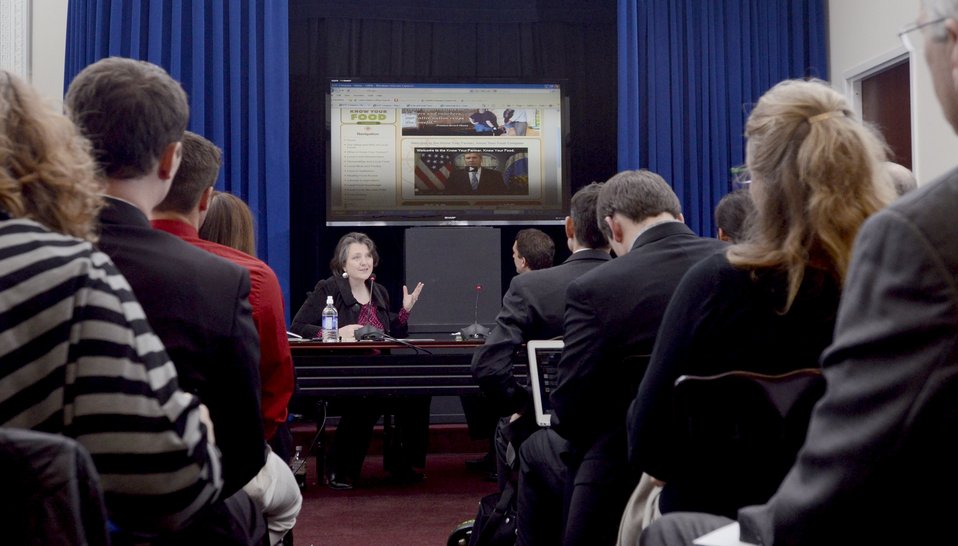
Agriculture Deputy Secretary Kathleen Merrigan and Director, White House Office of Public Engagement Jon Carson, during a Know Your Farmer Compass event that used twitter social media to continue the National Conversation on Local and Regional Food projects and how they offer economic opportunities to local farmers, ranchers and food entrepreneurs. The virtual conversation took place from the White House, in Washington, D.C., on Monday, March 5, 2012.